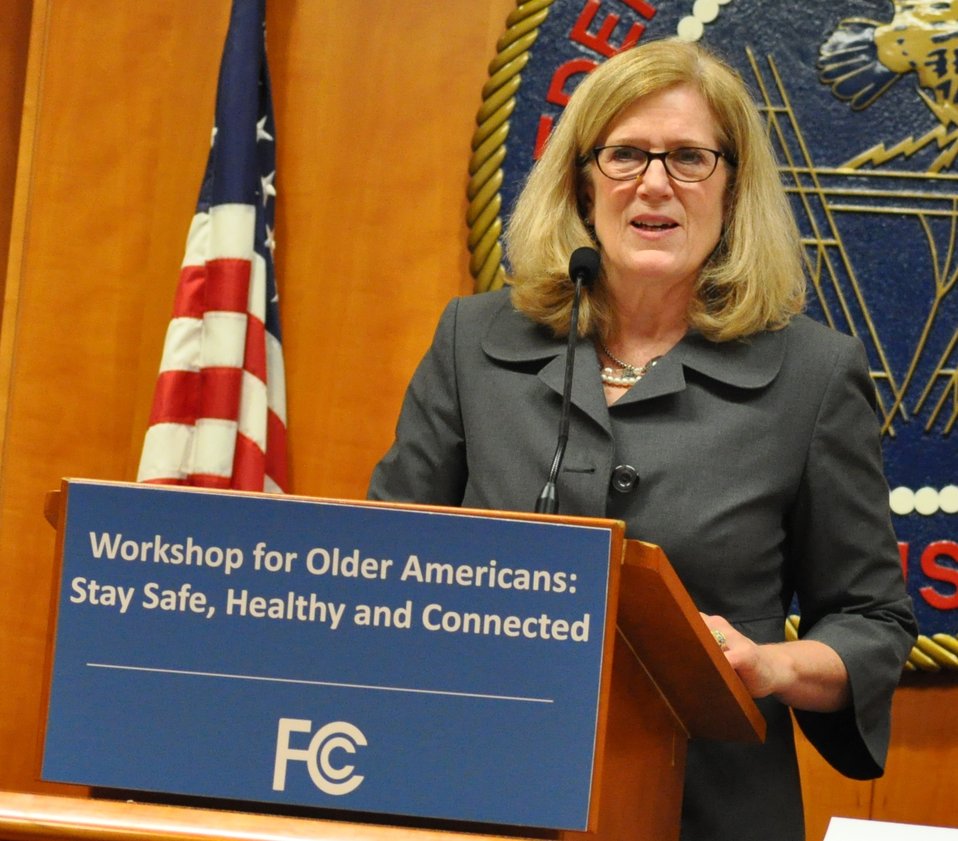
5.22.2014 Workshop for Older Americans: Stay Safe, Healthy and Connected

Welcome and Opening Remarks: Kris Monteith, Acting Bureau Chief, Consumer and Governmental Affairs Bureau, Federal Communications Commission